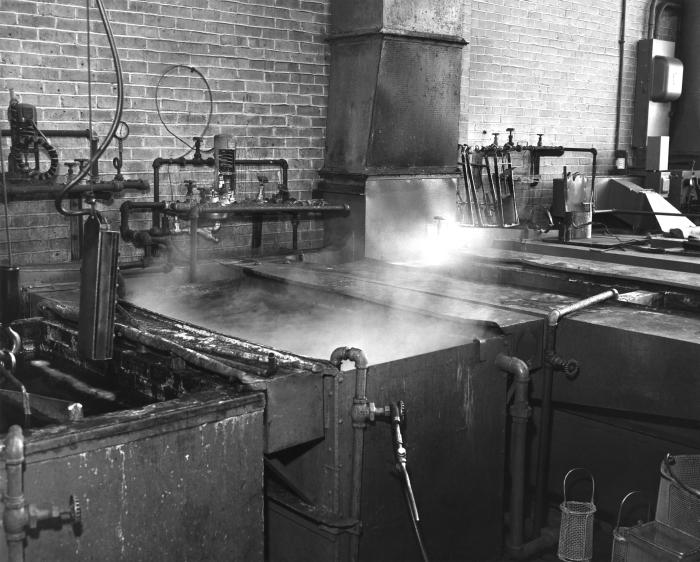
This historical 1953 photograph was provided by the Center for Disease Control's (CDC), National Institute for Occupational Safety and Health (NIOSH). Inside the Baltimore, Maryland Crown Cork and Seal Co., this image depicted a hot water and a sulfuric acid bath used in this factory's metal pre-plating process. The hot-water vat rinsed off the sulfuric acid that was used in the removal of the scale on the raw metal's surface, before being plated with copper, nickel, or some other metal. Note how the exhaust fumes were being drawn up the exhaust stack, and away from the workspace environment.